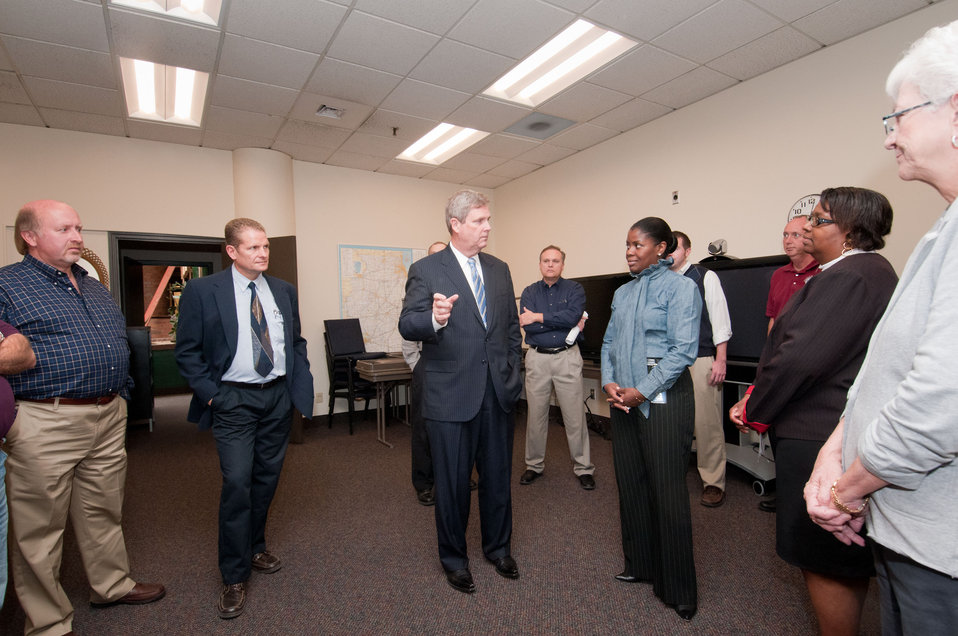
U.S. Department of Agriculture (USDA) Secretary Tom Vilsack (c.) visited the employees of the National Agricultural Statistics Service in Springfield, IL, to talk about current and future cutbacks across the department, during his visit on Wednesday, November 2, 2011. Secretary Vilsack recognized efforts people have made throughout the department and that it is important that USDA employees continue to develop ways to do more with less. He then provided an open question and answer session for the employees.